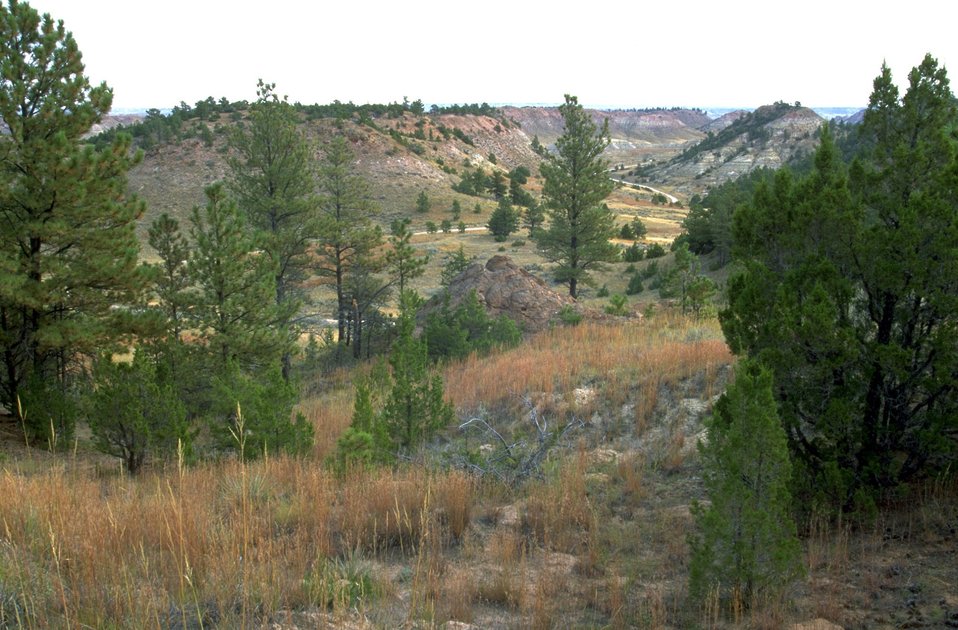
Scenic view of the Terry Badlands Wilderness Study Area